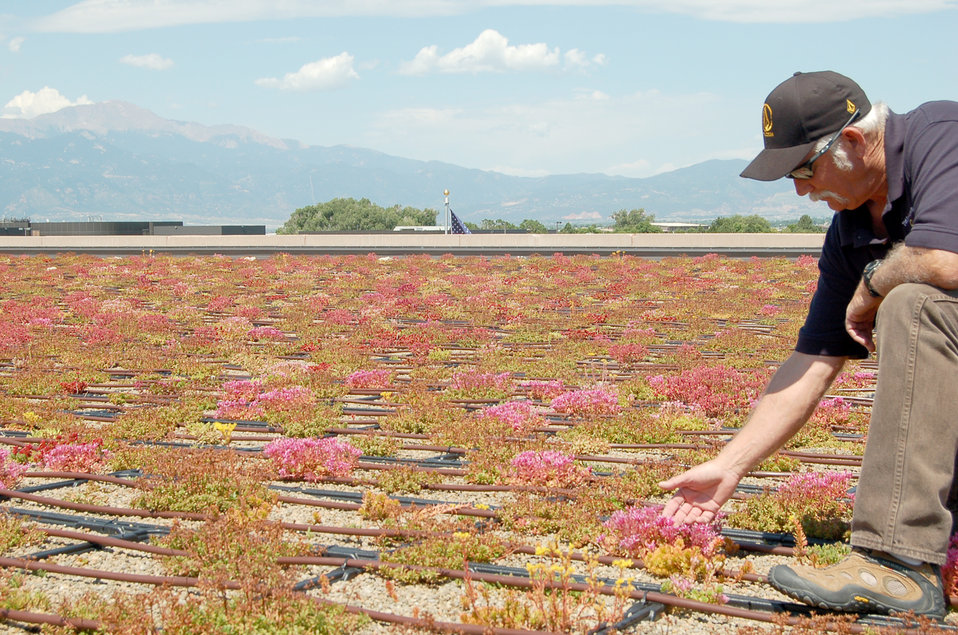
Green Roof

Phil Chase monitors Sedum plants on the vegetative rooftop of the 21st Space Wing headquarters building at Peterson Air Force Base, Colo. Heat is redirected through the plants instead of the rooftop, cooling the inside of the building. The building's roof is about 67 degrees cooler than the nearby 21st Mission Support Group building. Mr. Chase is the solid waste and hazardous materials program manager for the 21st Civil Engineer Squadron Asset Management Flight.